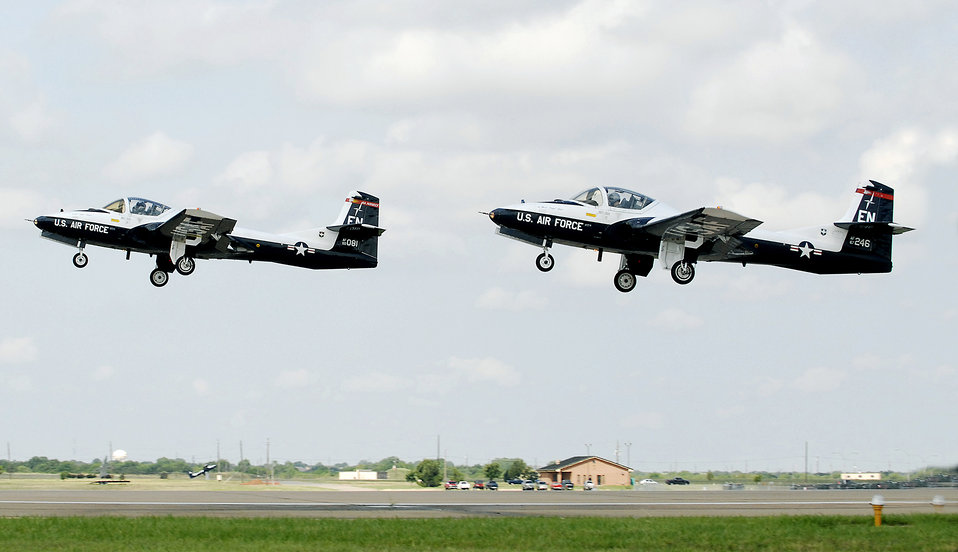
Time to retire

After more than 50 years of dependable service, the T-37 Tweet has retired. The last seven T-37s in the Air Force inventory, including the two pictured here, took off one final time July 31 as part of the aircraft's retirement ceremony.